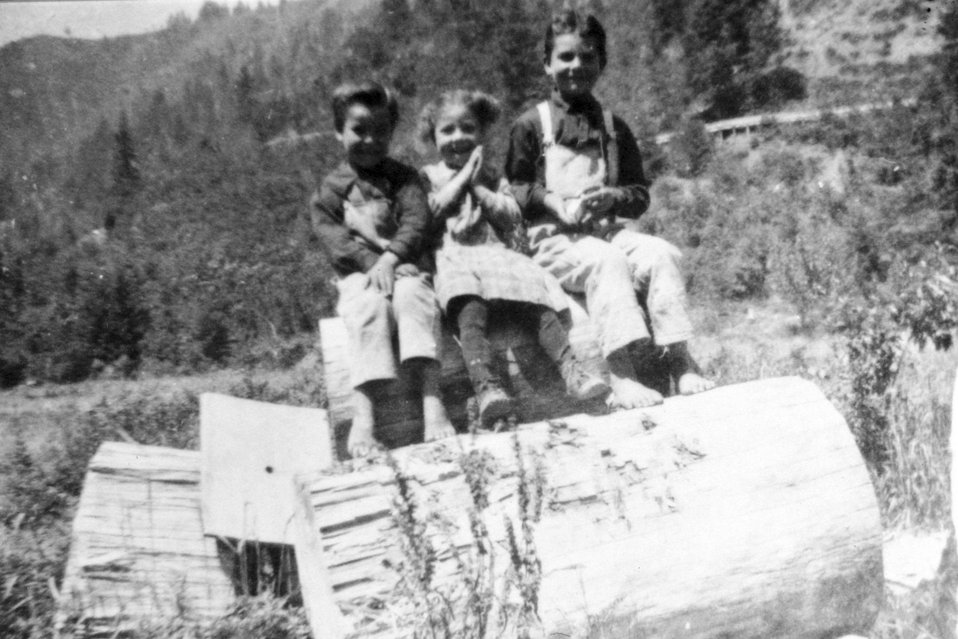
Evered, Alpine and Ivin Billings at Mule Creek. C. 1904